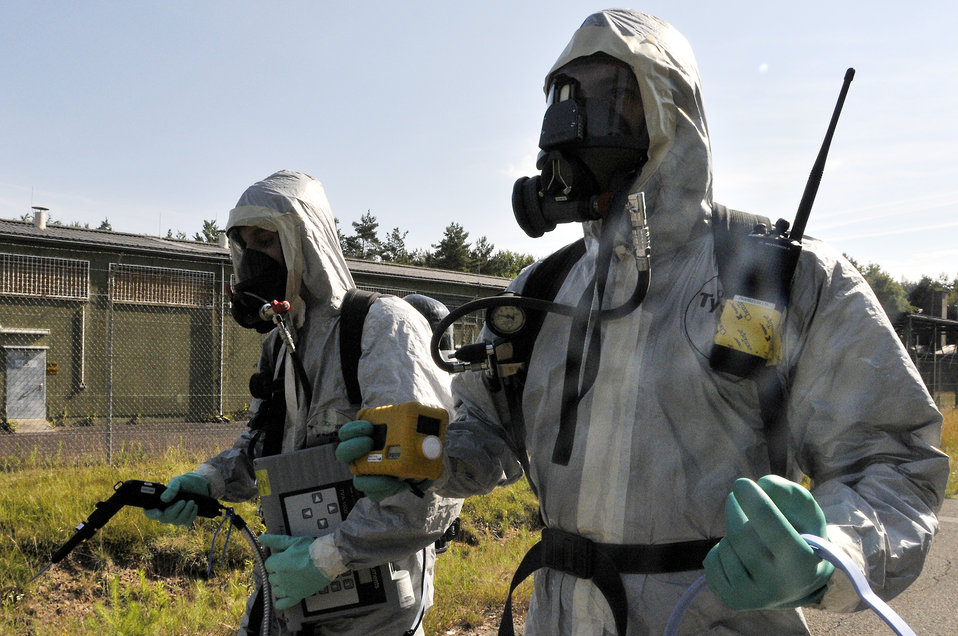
Airmen in Europe test threat responses

Airman 1st Class Mathew Kindoll and Staff Sgt. Christopher McFefries take a challenge in Level A suits during the 2009 Chemical, Biological, Radiological, and Nuclear Challenge June 22 at Ramstein Air Base, Germany. The CBRN Challenge consisted of six teams going head to head in six different scenarios. Airman Kindoll is assigned to the 48th Civil Engineer Squadron, and Sergeant McFefries is assigned to the 100th Civil Engineer Squadron.